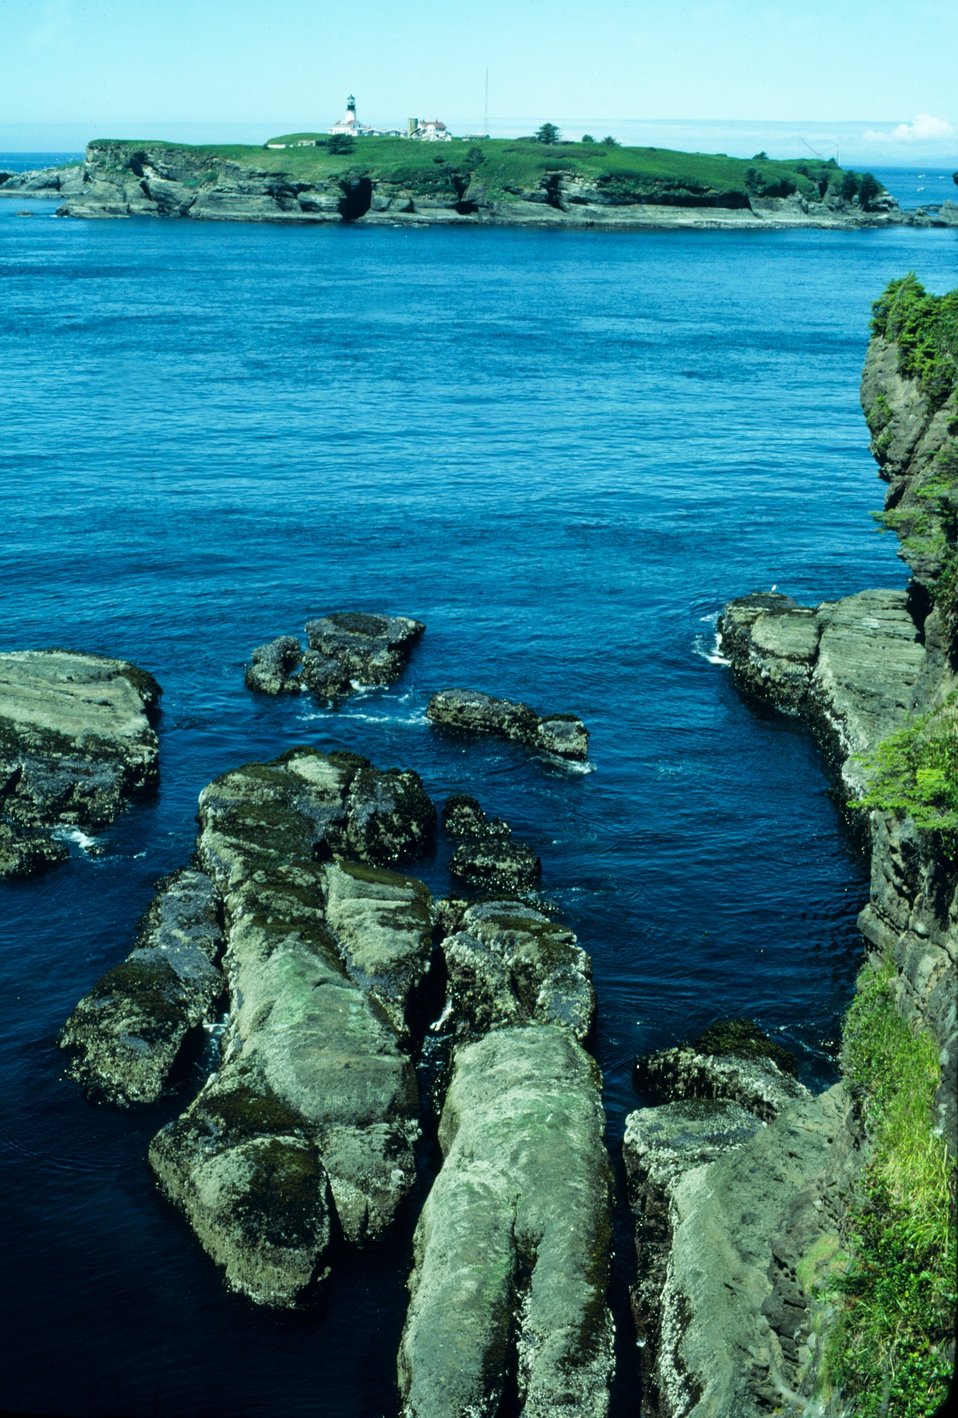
Tatoosh Island Lighthouse.